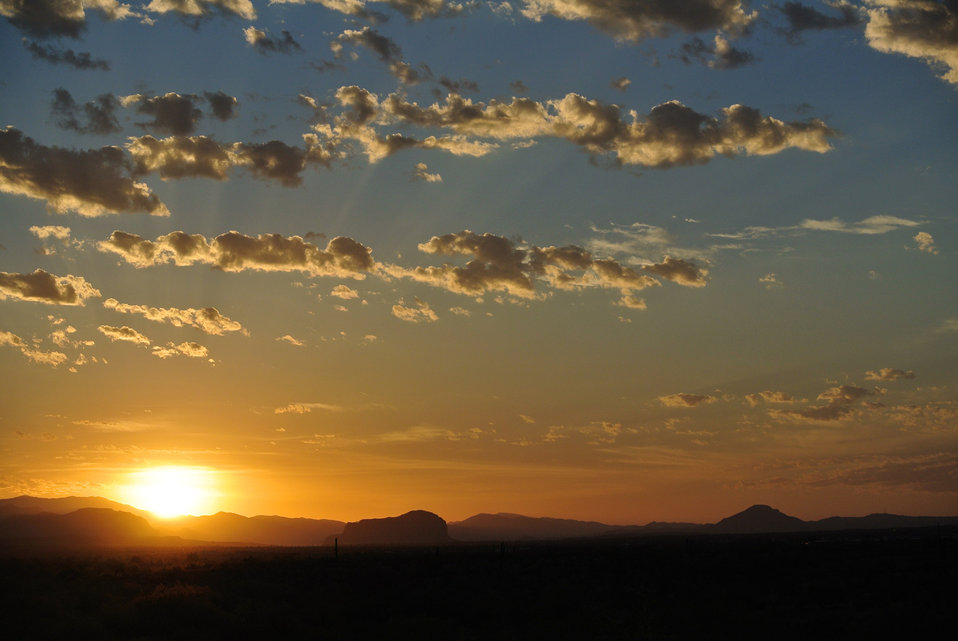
Sunrise 6-24-12 a2

Sunrise 6-24-12.